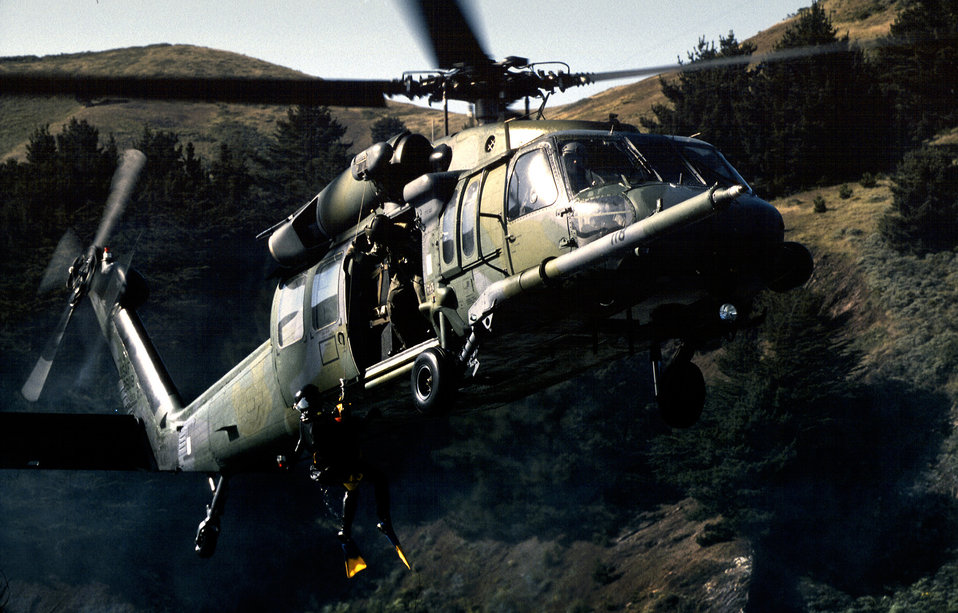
Low and slow

SAN FRANCISO -- California Air National Guard Tech. Sgt. Mike Sampognaro, flight engineer, keeps an eye on the Pacific ocean waves 20 feet below the HH-60G Pave Hawk of the 129th Rescue Wing, Moffett Federal Airfield, Calif. Lt. Col. Thomas Laut must fly with extreme care as he deals with gusting winds, sea spray, sun glare, and sea swells. He is climbing from a